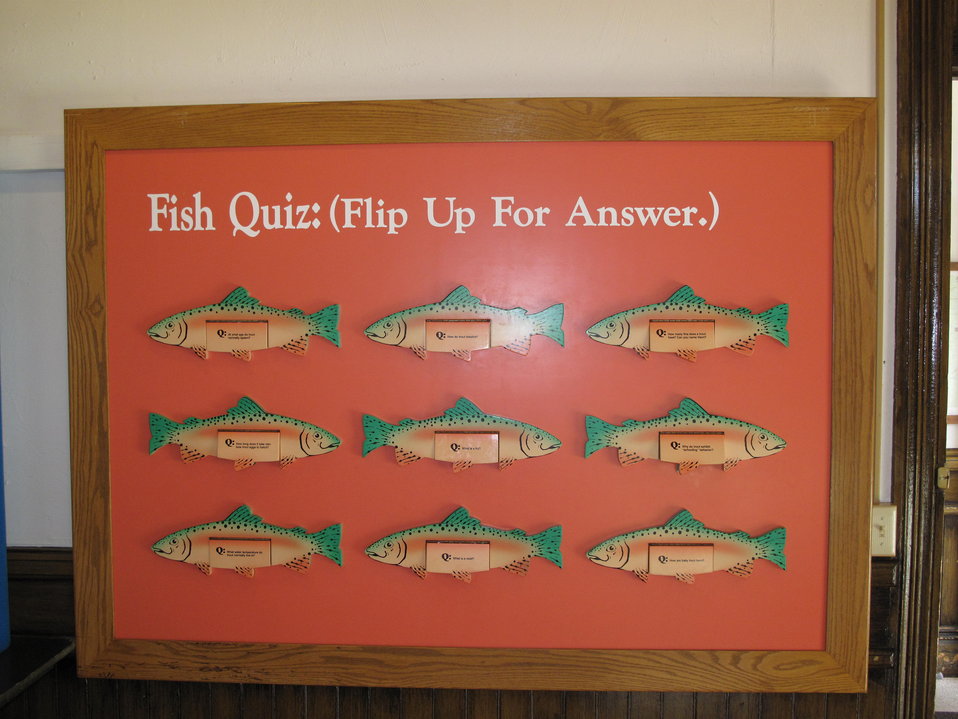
Leadville National Fish Hatchery

An interactive board for children to learn quick facts about fish.